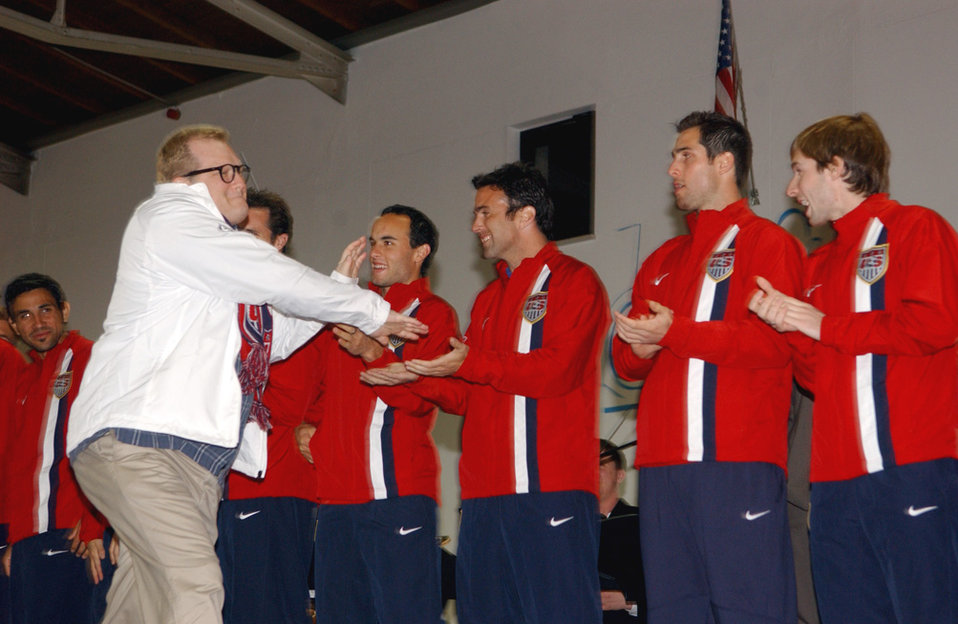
U.S. Men's National Soccer Team at Ramstein

Drew Carey greets the U.S. Men's National Soccer Team at a pep rally Tuesday, Feb. 28, 2006, at Ramstein Air Base, Germany. The team is playing against Poland March 1 in Kaiserslautern. Mr. Carey came as a surprise guest to the rally to support the team and meet with fans.